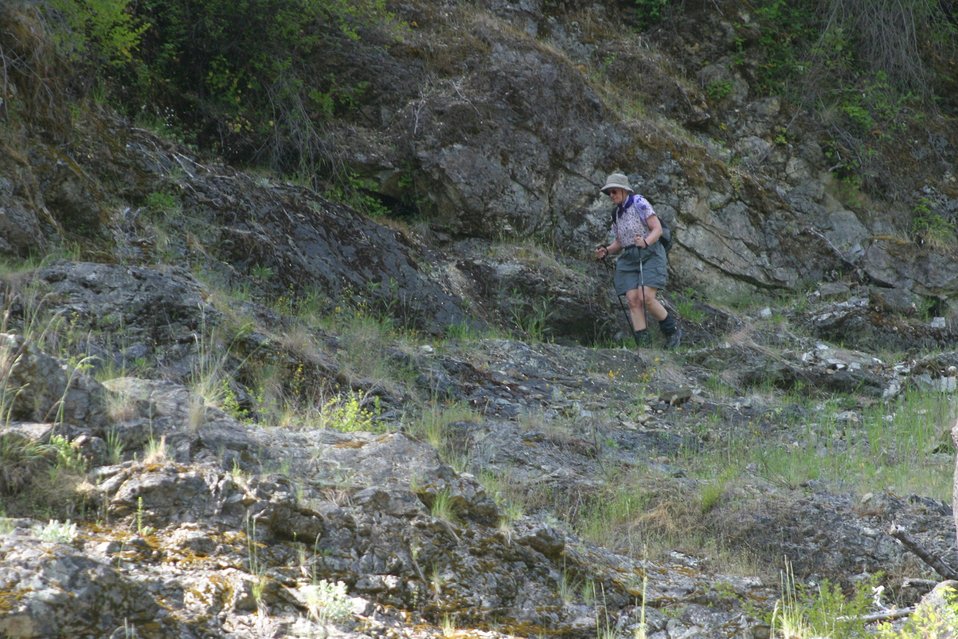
Wild section of the Rogue River from Grave Creek to Foster Bar May 19 to May 22.